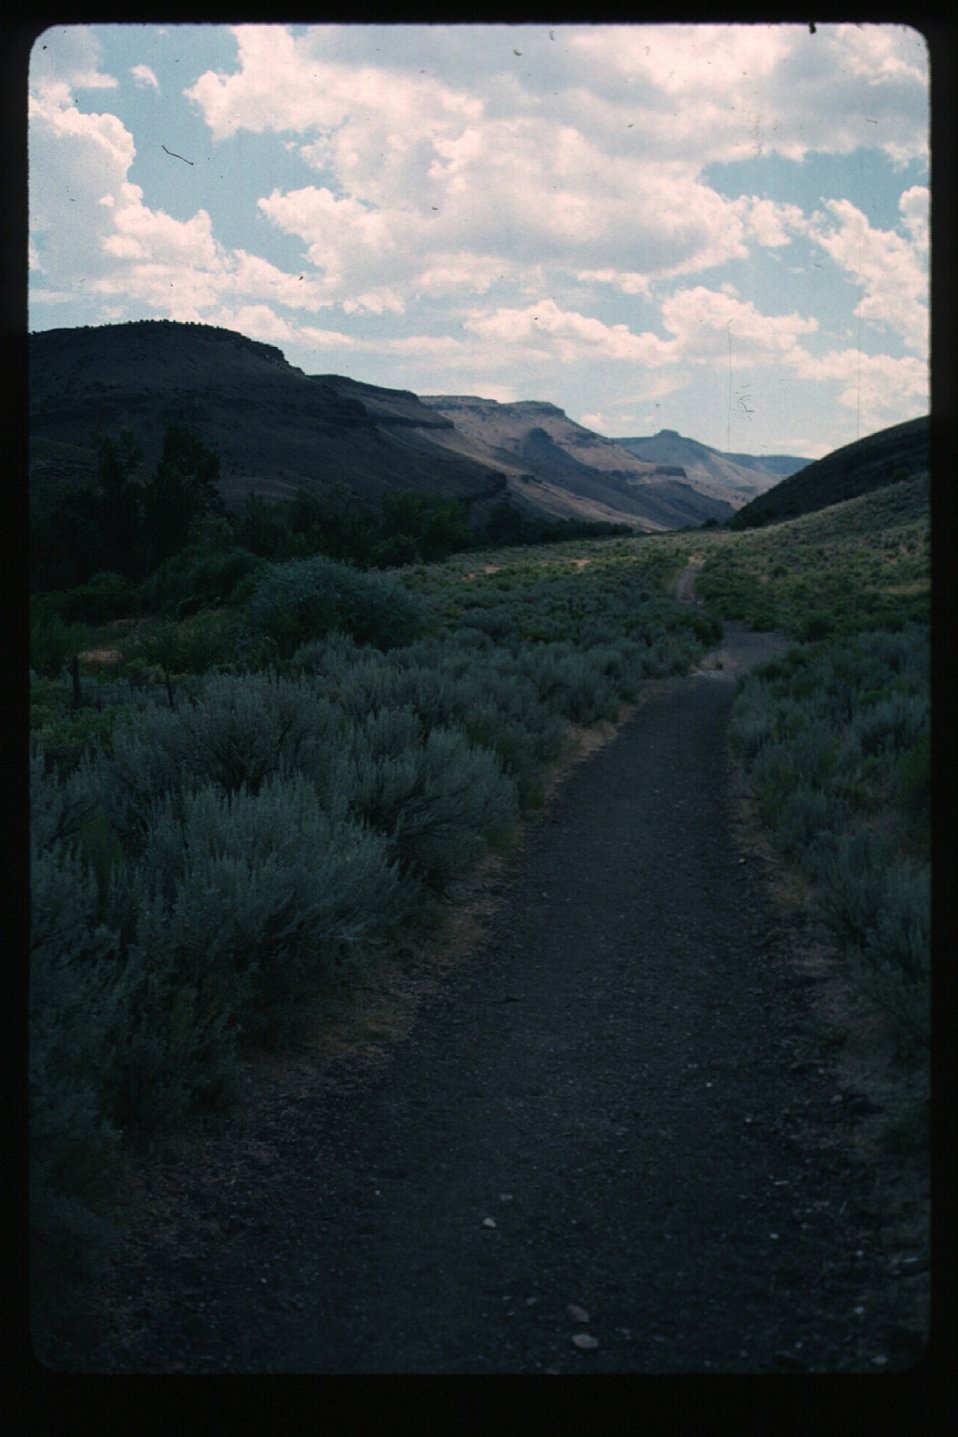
Big Cottonwood Trail Scenic USRD Upper Snake River District